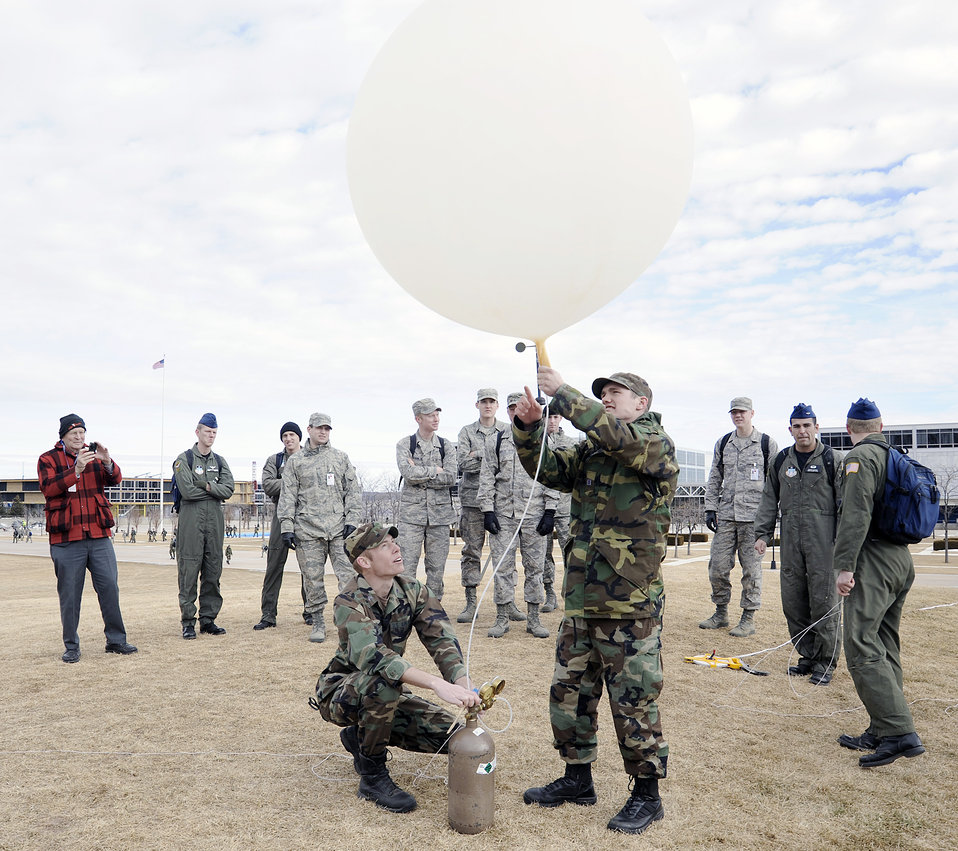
U.S. Air Force Academy, Colo-- Cadet 1st Class John Bowman and Cadet 2nd Class Taylor Olson fill the weather balloon with helium just prior to launch as part of the Meteorology 320 course, Introduction to Meteorology and Aviation Weather. This course teaches the fundamentals of meteorology with special emphasis placed on flight weather and its impact on aviation.